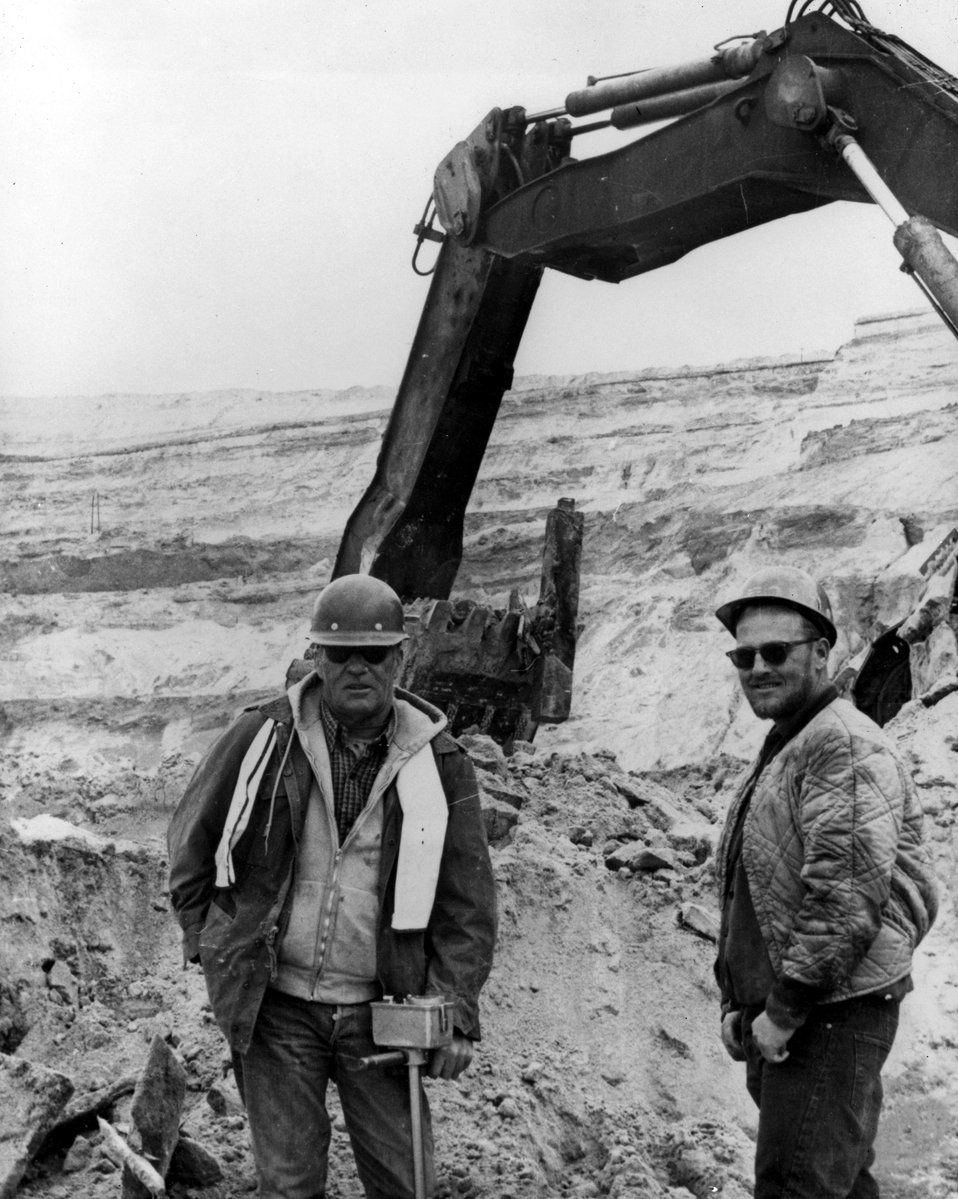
Here John Buchholz, probe, and Dan Smith, backhoe operator, survey the debris from old mine timbering. c. 1976